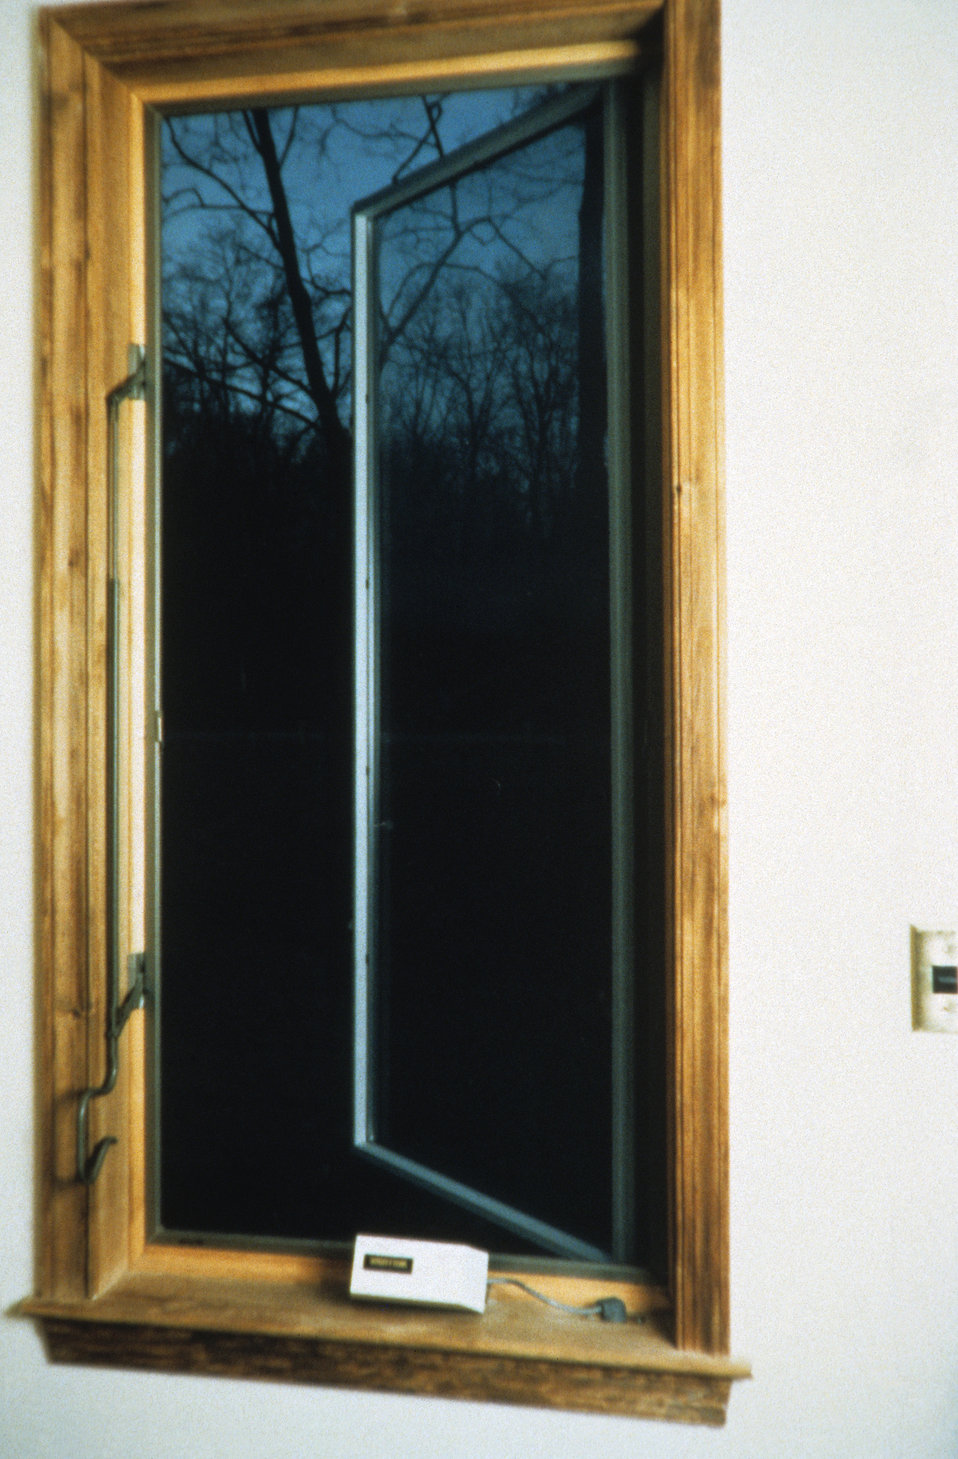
This 1995 image depicted an electronically controlled casement window mechanism. The window, opened here in this photograph, was opened and closed with a mere turn of a knob, which was installed conveniently on the casement at the sill level, thereby, facilitating usability for those confined to a wheelchair, or very short users. The ease with which one could rotate the control dial, as well as its placement, showed that the needs of those who were mobility impaired were taken into account when designing this motorized mechanism. These can often replace the manual crank if the manual crank cannot be reached, or if the crank is too difficult to manipulate. The electric mechanism can also be switched remotely.